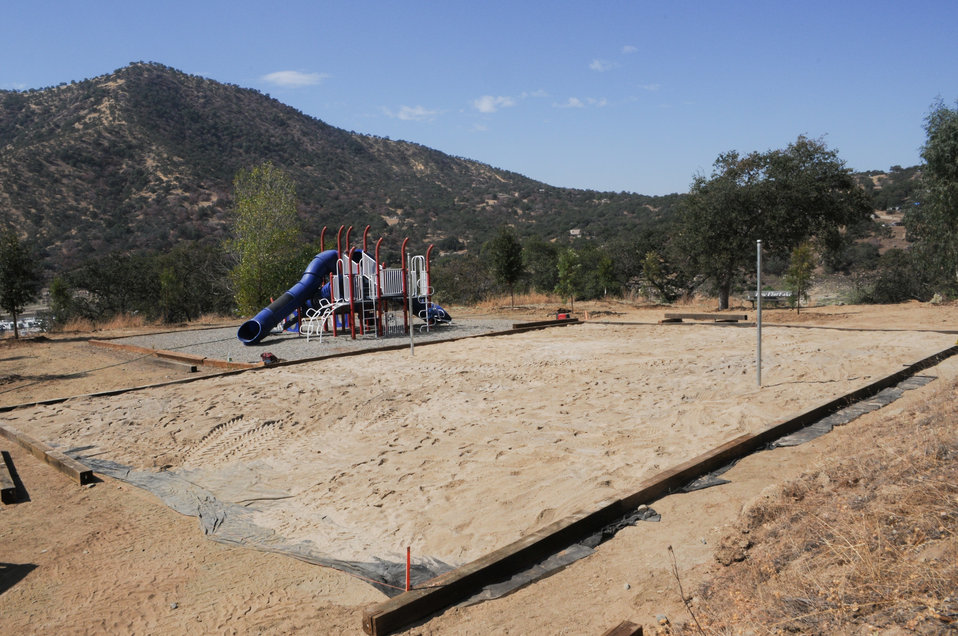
National Public Lands Day at Pine Flat Lake

A new sand volleyball court at Pine Flat Lake near Sanger, Calif., built by National Public Lands Day volunteers awaits final touches Sept. 24. More than 60 volunteers turned out to help plant trees and build the court and horseshoe pits at the park. Pine Flat was one of seven U.S. Army Corps of Engineers Sacramento District recreation parks that participated in the event.